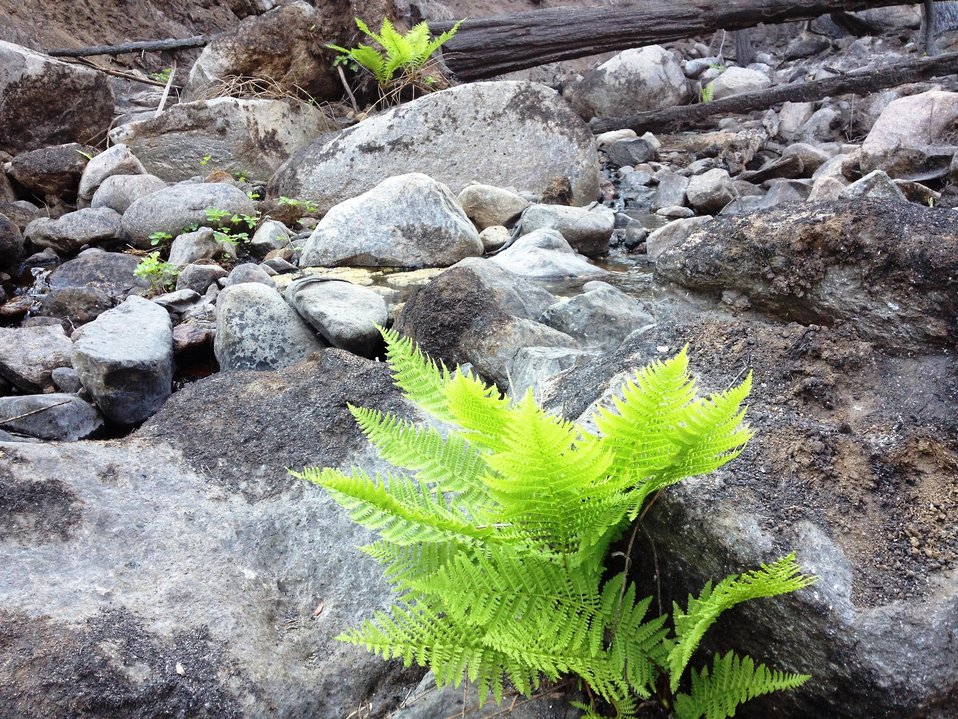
Three weeks after the Rim Fire, new vegetation starts growing. Burned Area Emergency Response (BAER) is a rapid assessment of burned watersheds by a BAER team to identify imminent post-wildfire threats to human life and safety property and critical natural or cultural resources on National Forest System lands and take immediate actions to implement emergency stabilization measures before the first major storms. Fires result in loss of vegetation exposure of soil to erosion and increased water runoff that may lead to flooding increased sediment debris flows and damage to critical natural and cultural resources. BAER team members implement seeding and mulching installation to prevent erosion, erect temporary water run-off control structures that will protect recovering areas, and installation of warning signs, replace safety related facilities, remove safety hazards, prevent permanent loss of habitat for threatened and endangered species, and prevent the spread of noxious weeds and protect critical cultural resources. The Rim Fire in the Stanislaus National Forest near in California began on Aug. 17, 2013 and is under investigation. The fire has consumed approximately 256,169 acres and is 84% contained.